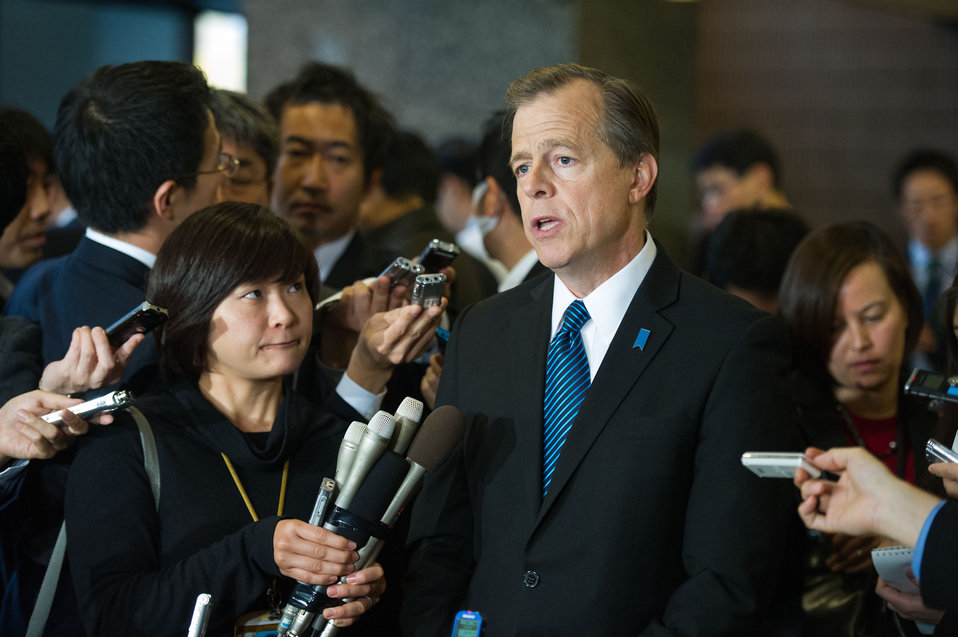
Special Rep for North Korea Davies Addresses Tokyo Media

Special Representative for North Korea Policy Glyn Davies addresses the international media after his meeting with Mr. Junichi Ihara, Director-General of the Asian and Oceanian Affairs Bureau, Ministry of Foreign Affairs, in Tokyo, Japan, on November 25, 2013.